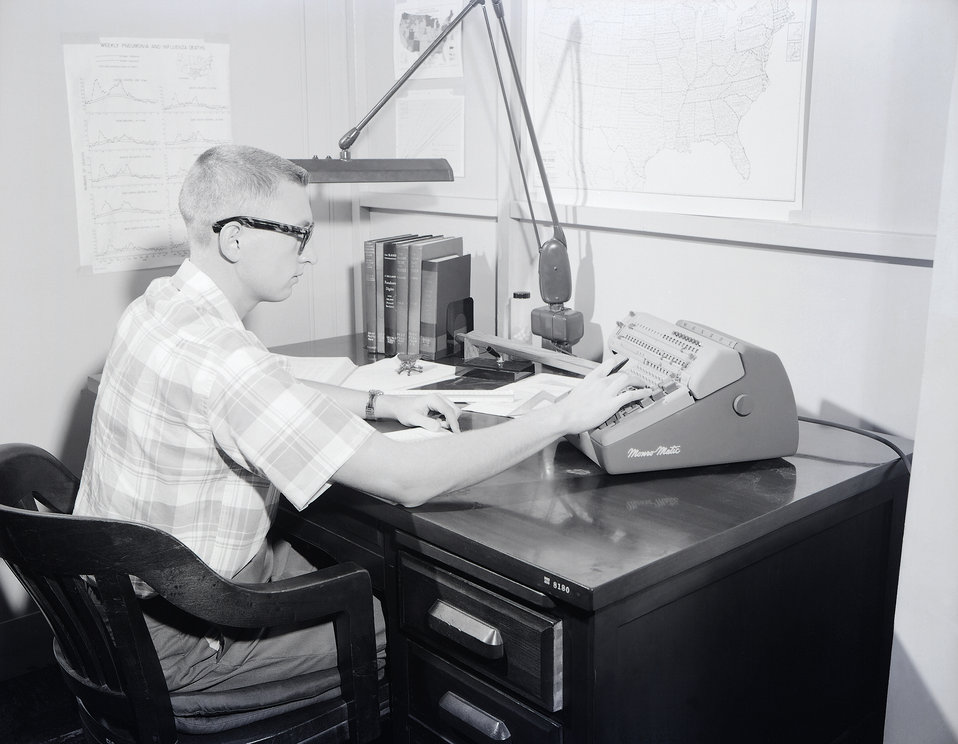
This historic image depicted a Centers for Disease Control statistician seated at his desk, while in the process of performing numeric calculations using a MonroMatic desktop calculator, Model 8N-213.